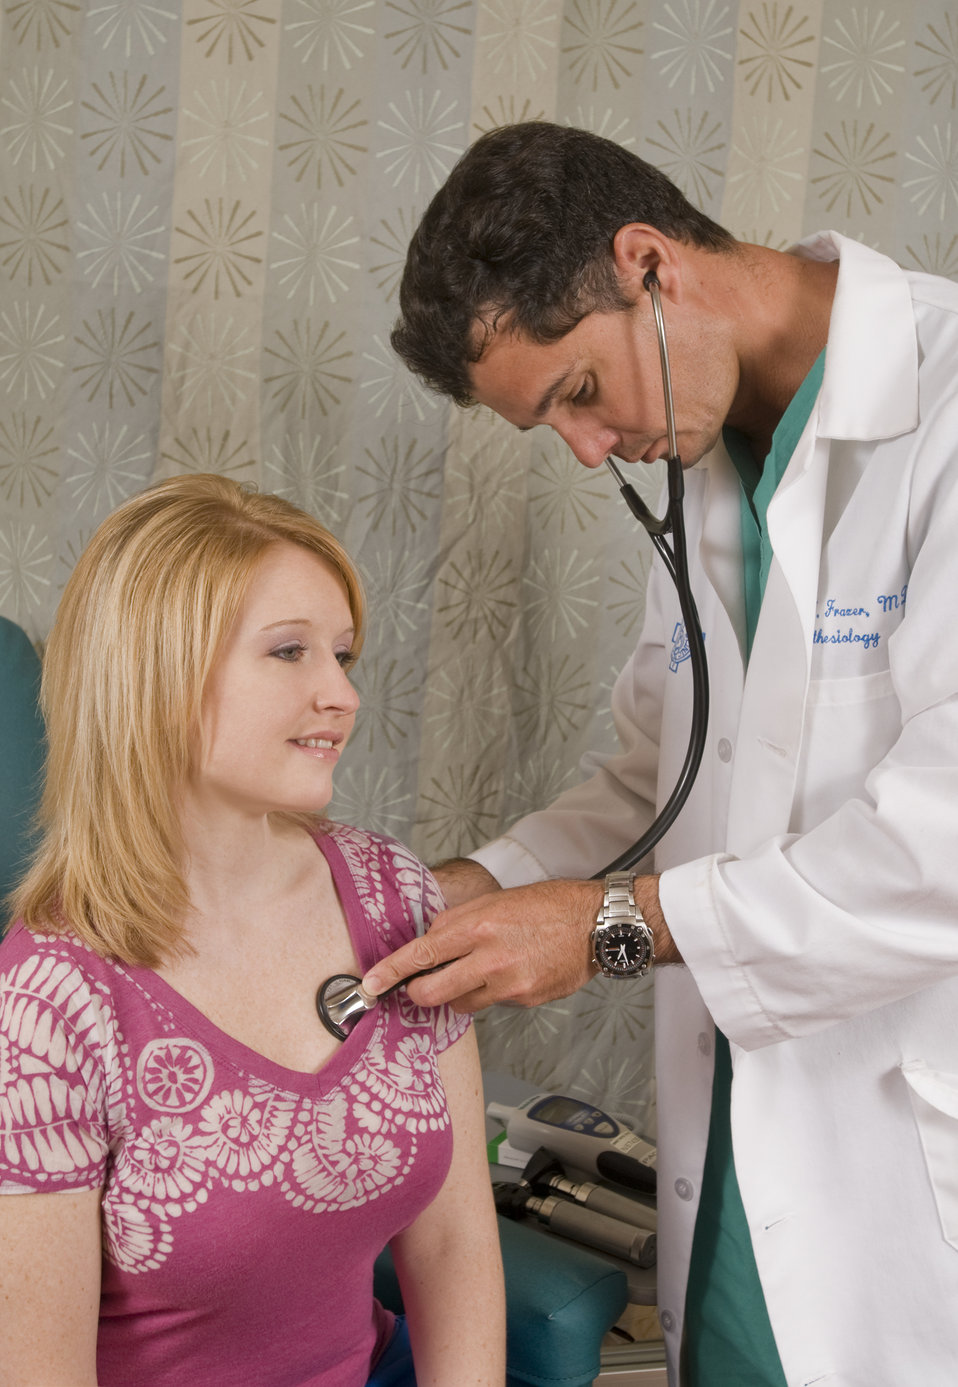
Doctor with female patient

At this point in her physical examination, a physician was using a stethoscope to listen to sounds emanating from within the chest cavity of a female patient. The sound-sensitive end of the device was being applied to the patient's left upper anterior chest at this point in her exam.